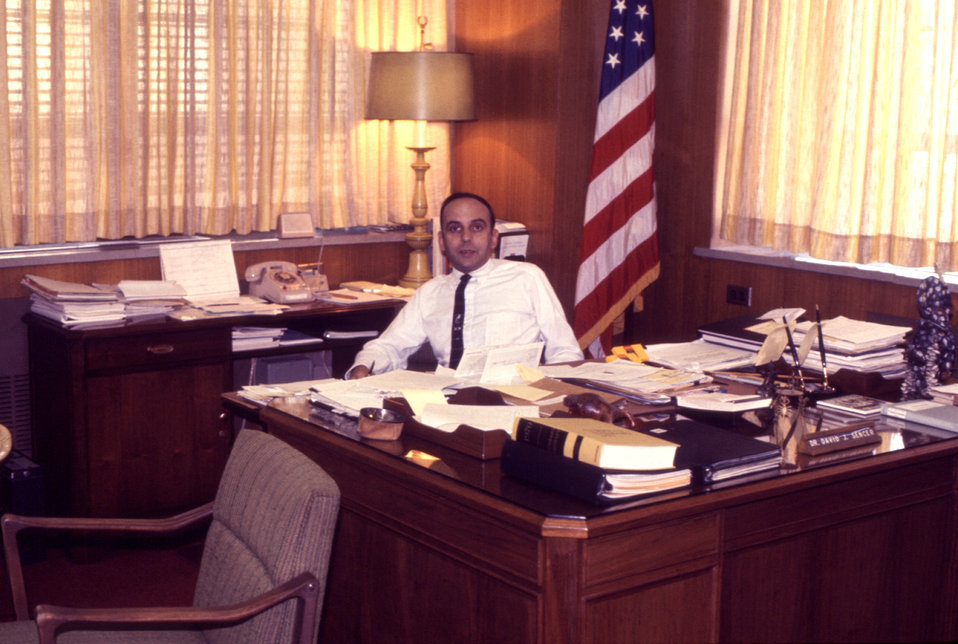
This is a 1970 image of Dr. David Sencer, former Dir. of the Centers for Disease Control and Prevention from 1966 through 1977.